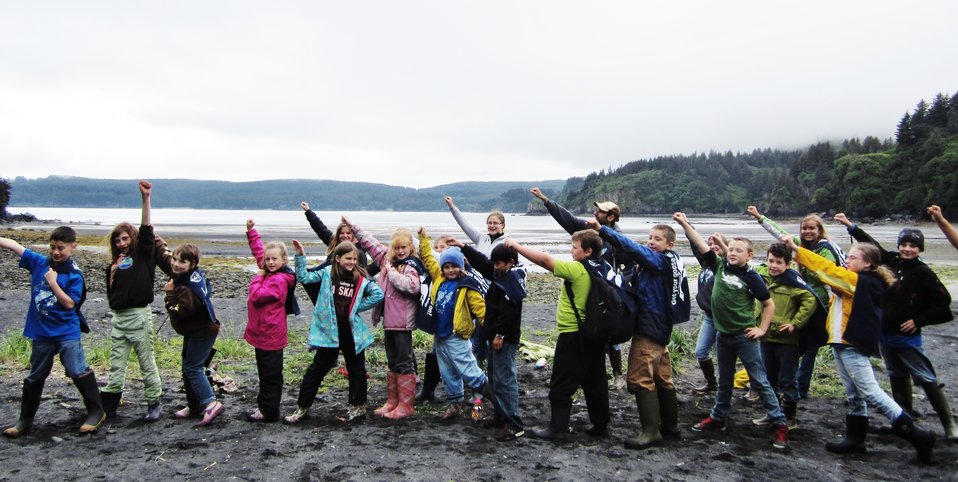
Get Your Goose On! - Alaska Style

Kodiak Refuge Summer and Science Art Camp.

Campers: McKenna Donohue, Bailey Mullen, Solomon Himelbloom, Tymber Bashem, Gage Johnson, Dominic Conol, Anastasia Gauthier, Abigail Groncki, Ashley Cowin, Leslie Spear, Brayden Pfister, Myah Morrison, Dylan Morrison, Olivia Young, Samantha Burnside, Tito Sabangan, Ava Pruitt, Greyson Lincoln. USFWS staff/volunteers: Kristen Riesberg, Ali Sutton, Rory Psotka and Kari Eschenbacher.

Credit: Kari Eschenbacher / USFWS

The Kodiak National Wildlife Refuge is a United States National Wildlife Refuge in the Kodiak Archipelago in southwestern Alaska, United States.

The Kodiak National Wildlife Refuge includes the southwestern two-thirds of Kodiak Island, Uganik Island, the Red Peaks area of Afognak Island and all of Ban Island in the archipelago. It encompasses 1,990,418 acres (8,054.94 km2).[2] The refuge is administered from offices in Kodiak.

The refuge contains seven major rivers and about 100 streams. It is a spawning ground for all six species of Pacific Ocean salmon, trout and several other fish species, as well as a nesting ground for 250 species of bird, many of which feed on salmon. The refuge has only six native species of mammals: Kodiak brown bear, red fox, river otter, ermine, little brown bat and tundra vole. The non-native mammals Sitka deer, mountain goat, Roosevelt elk, snowshoe hare and beaver were introduced to the archipelago between the 1920s and 1950s and are now hunted and trapped.

The climate of the refuge is that of southern Alaska, mild and rainy. Many areas in the refuge are densely forested with Sitka Spruce at lower elevations. There are grasslands in drier areas and at higher elevations. The refuge contains several small glaciers.